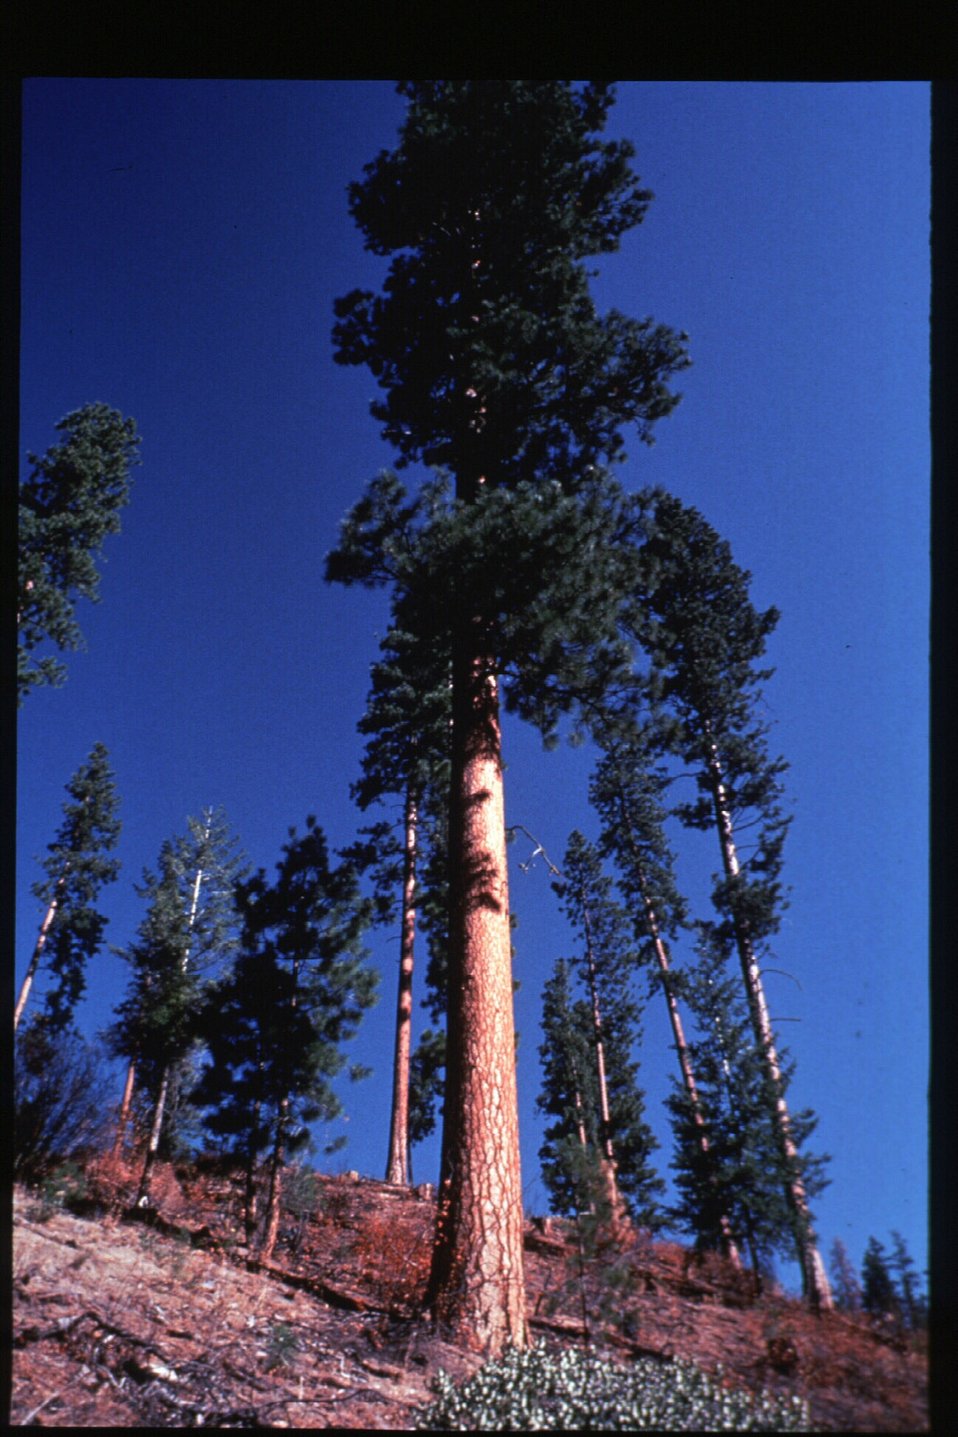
Boise Foothills Fire Danskin Mountains and South Fork of Boise River Four River Field Office LSRD Lower Snake River District